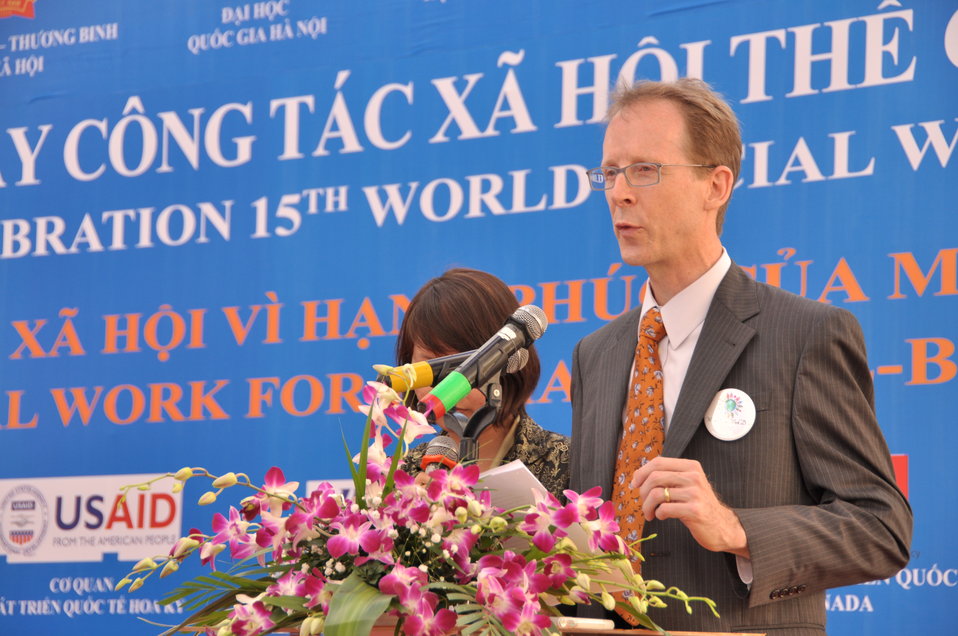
USAID Mission Director Joakim Parker speaks at the Social Work Day event in Hanoi

Photo: @USAIDVietnam, November 9, 2012